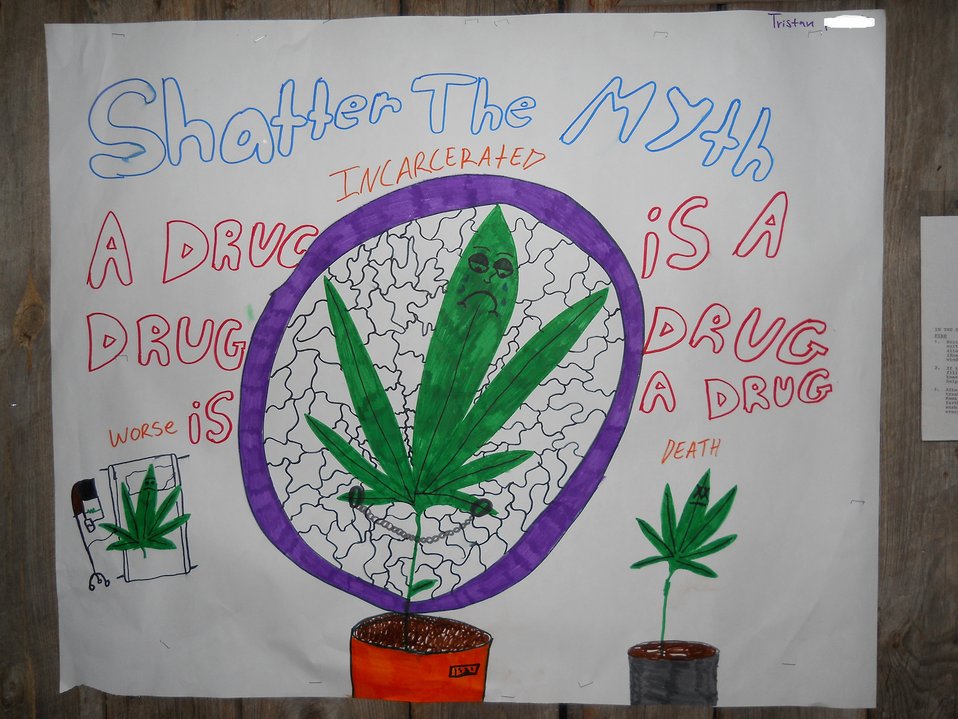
NDFW 2013 Poster contest winner

Arlington, Va. Ready Coalition NDFW 2013 Event.